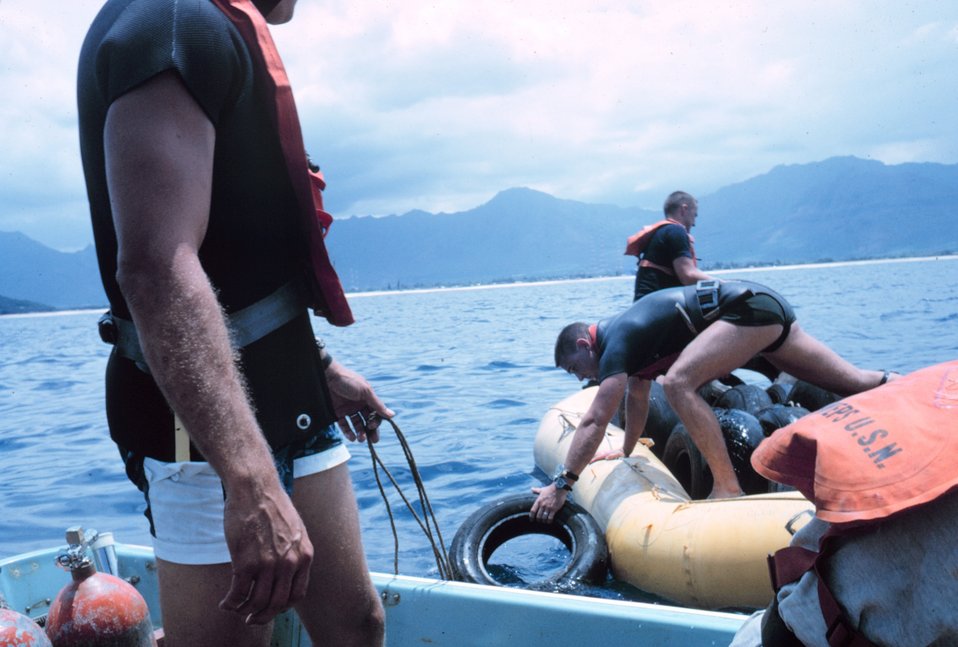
Navy divers assisting in the placement of used tires as an alternate reef material on the artificial reef site at Pokai Bay, Oahu. The tires did not stay in place because of the strong surge of the large Pacific swells at the site.